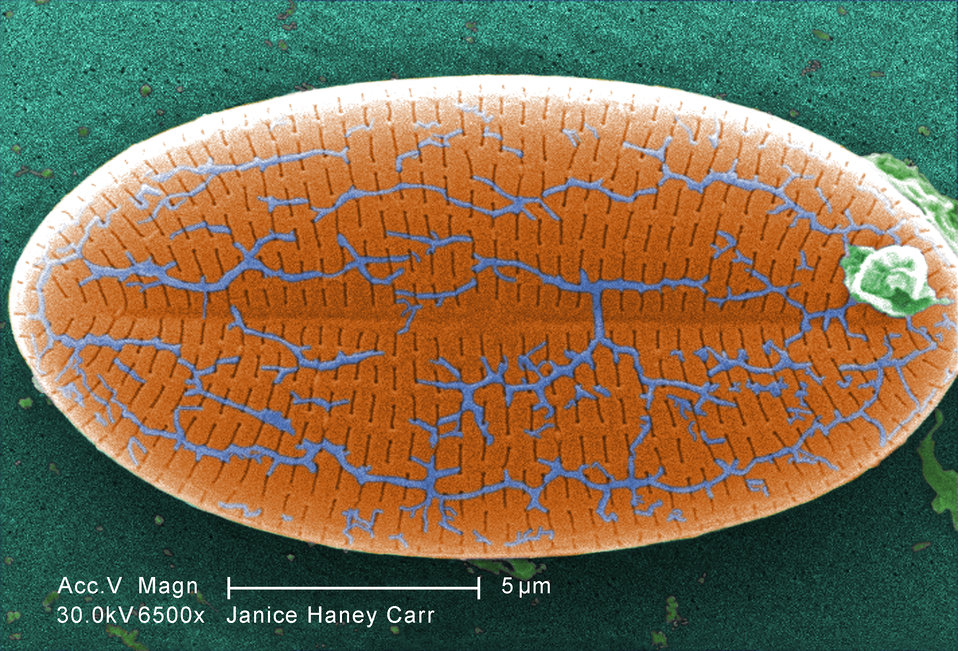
This digitally-colorized scanning electron micrograph (SEM) of an untreated water specimen extracted from a wild stream mainly used to control flooding during inclement weather, revealed the presence of unidentified organisms, which included bacteria, protozoa, and algae. In this particular image, a single unidentified diatomic microorganism was depicted revealing a wondrous symmetrical ultrastructural morphology.